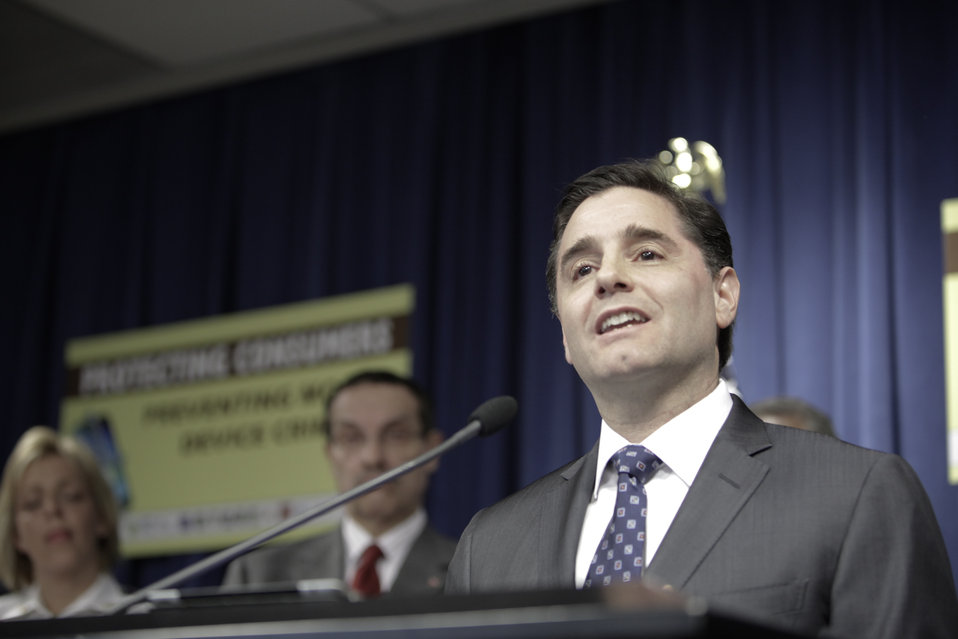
FCC Chairman Genachowski speaks about consumer protection against theft of data and smartphones at the John A. Wilson Building in Washington, DC on April 10, 2012.